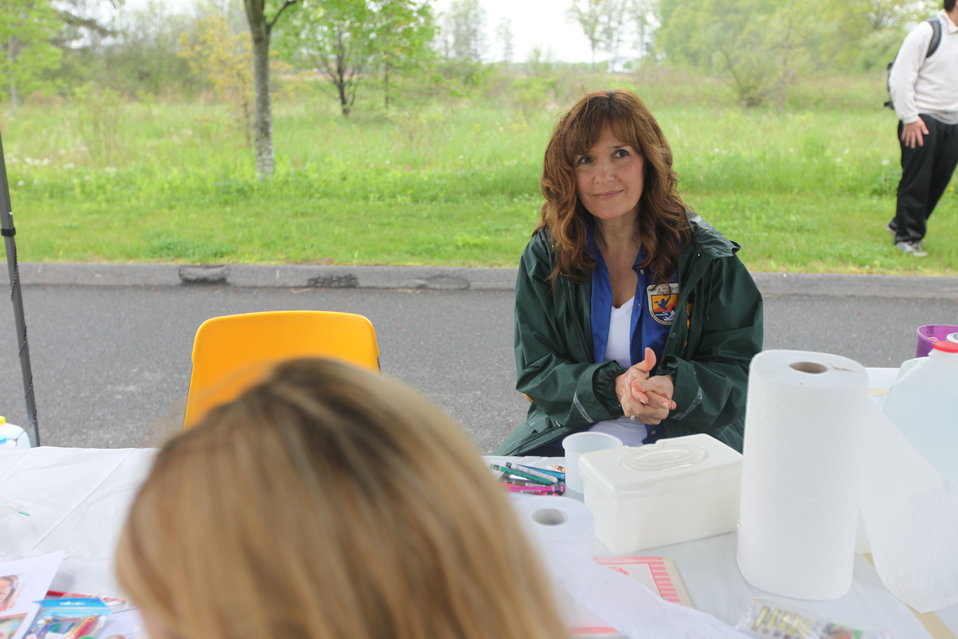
Fishing Derby